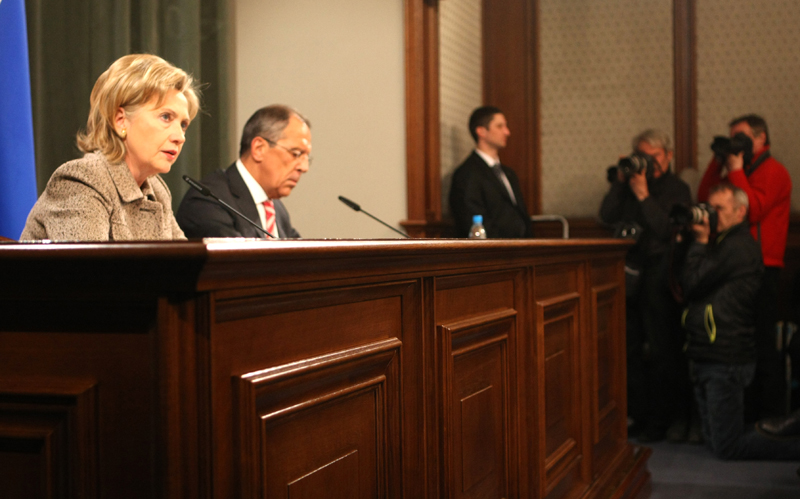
Secretary Clinton With Russian Foreign Minister Sergey Lavrov

U.S. Secretary of State Hillary Rodham Clinton speaks during a joint press conference with Russian Foreign Minister Sergey Lavrov in Moscow, Russia March 18, 2010.